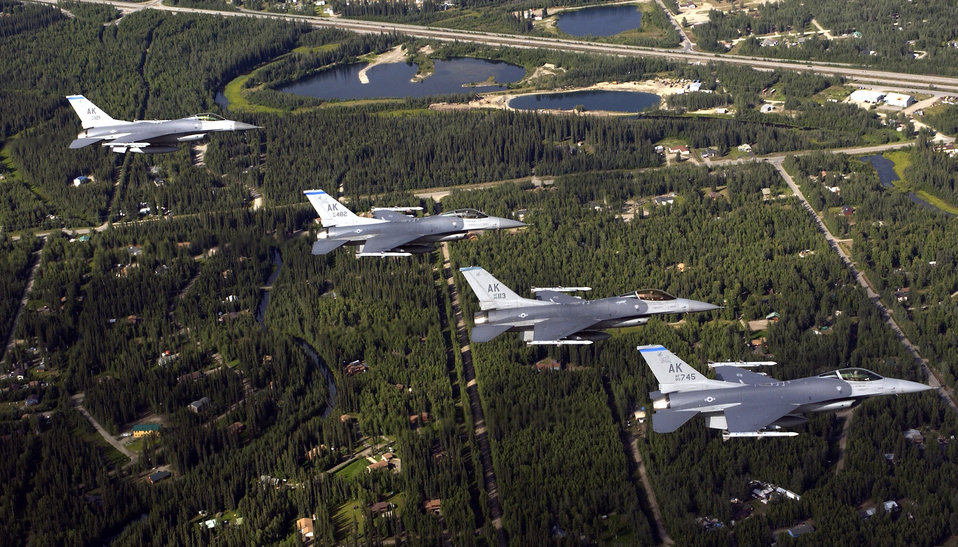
A nice day for a fly by

OVER EIELSON AIR FORCE BASE, Alsaka -- Four F-16C Fighter Falcons from the 18th Fighting Squadron fly in formation during a training mission here July 27.